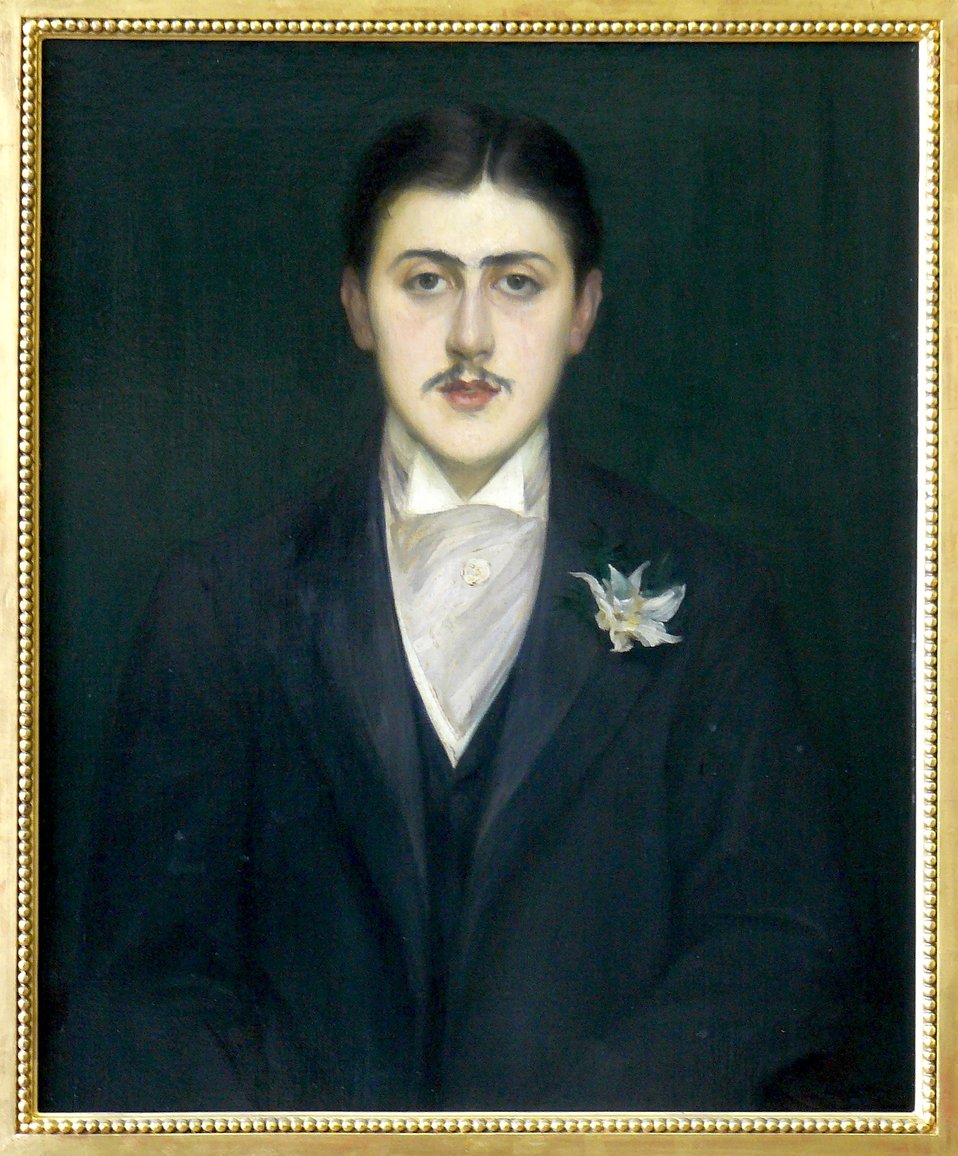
J E Blanche Marcel Proust 01-01-2013